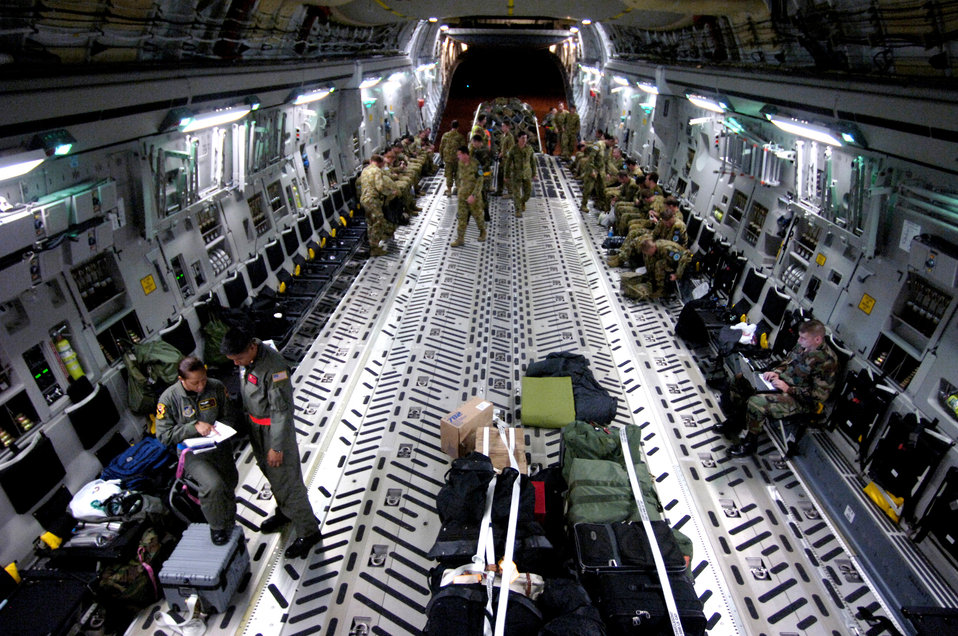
Loadmasters help reposition Australian Defense Forces

Staff Sgt. Joleen Manuia and Airman James Ngo (bottom left) look over their checklist as Australian Defense Force members load items on a C-17 Globemaster III at Honiara International Airport, Solomon Islands, on Saturday, May 27, 2006. Sergeant Manuia is with the Hawaii Air National Guard's 204th Airlift Squadron. Airman Ngo is with the 535th AS at Hickam. Both are C-17 Globemaster III loadmasters. They are two of the Air Force crew members helping move equipment and troops from the Solomon Islands to Australia, repositioning Australian Defense Forces to support peace operations in East Timor.